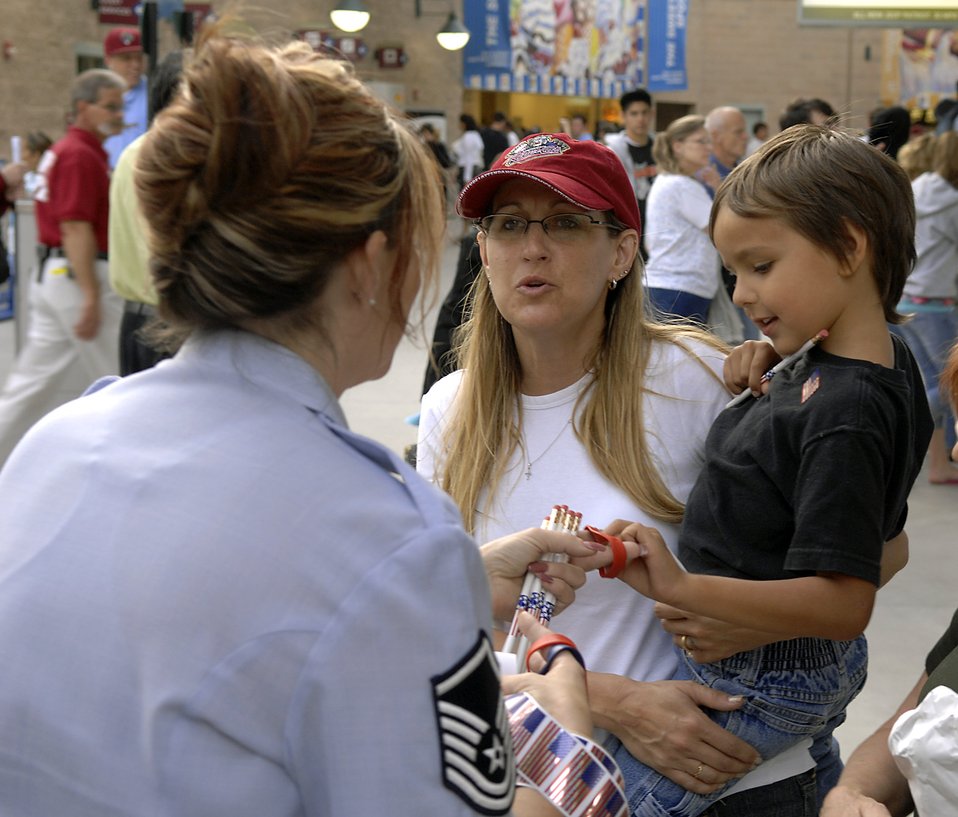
Sacramento Rivercats host Air Force Week event

Master Sgt. Denise Fuentes talks to Sharon and Joseph Estrella about the oppurtunities available in the Air Force before a local minor league baseball game June 4 during Air Force Week in California. The purpose of Air Force Week is to inform and educate the American public about the importance and roles of the Air Force in America's national defense. Sergeant Fuentes is a recruiter for the Sacramento Air National Guard.